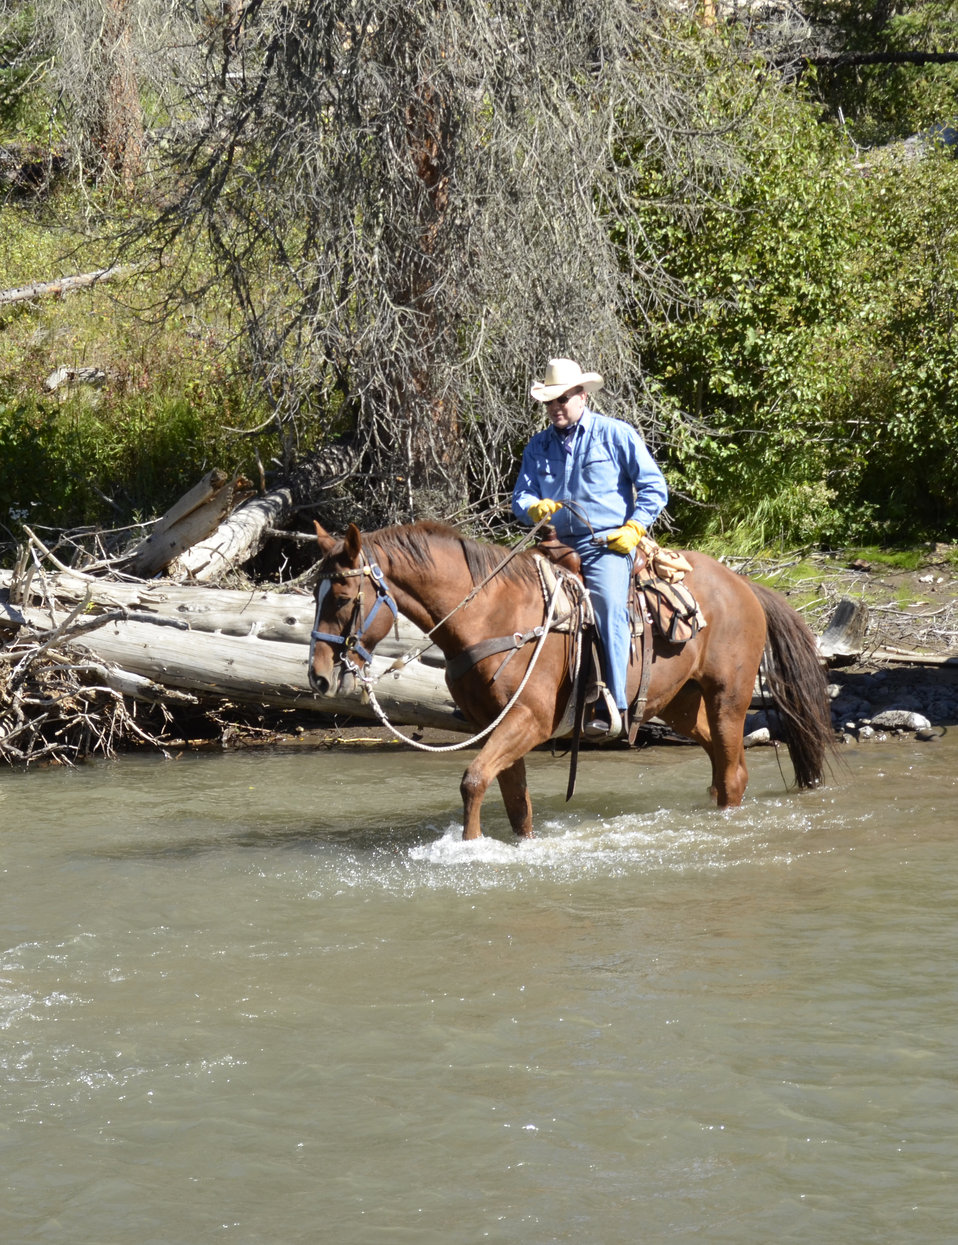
Prince Albert Riding

His Serene Highness (HSH) Prince Albert II of Monaco rides through a river on a guided tour by Forest Service employees and Lee Livington Outfitting, Inc., in the Shoshone National Forest, WY. U.S on Sep. 20, 2013. HSH Prince Albert II of Monaco retraced the hunting trip his great-grandfather took 100 years ago with William “Buffalo Bill” Cody and the first Special Superintendent of Forest Reserves Abraham Archibald Anderson. The successful hunting trip cemented lasting relationships between the men and established an area in the Absaroka-Beartooth Wilderness, which is still known today as Camp Monaco. U.S. Forest Service photo by Kristie Salzmann.Forest Service photo by Kristie Salzmann.